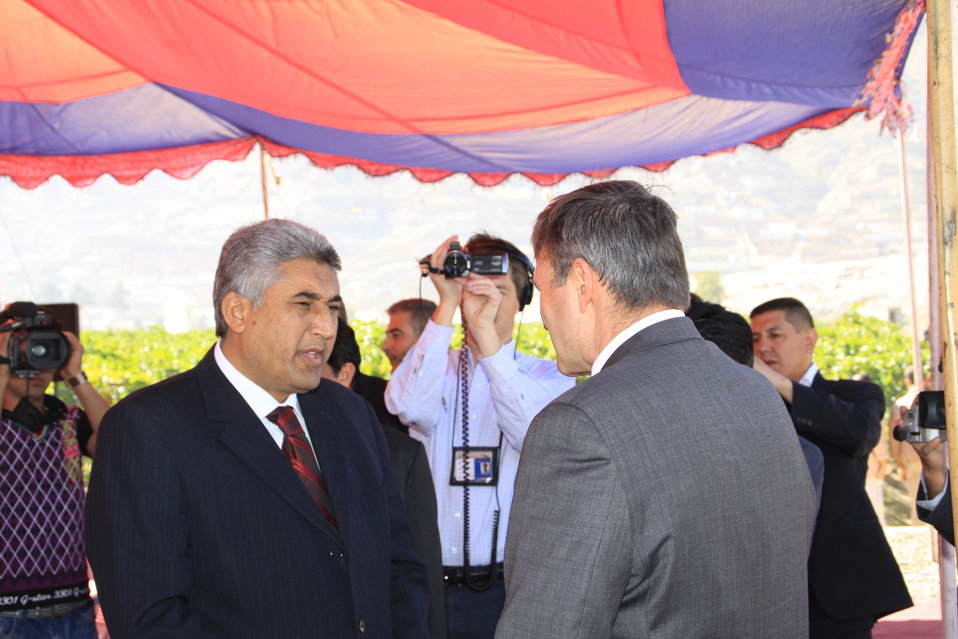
AVIPA Plus Wheat Seed Distribution 101005

US Ambassador Karl Eikenberry and USAID Acting Mission Director Kevin Brownawell joined the Minister of Agriculture, Irrigation and Livestock, H.E. Minister Mohammed Rahimi in signing a Memorandum of Understanding and distributing vouchers to area farmers for wheat and fertilizer.

US Ambassador Karl Eikenberry and USAID Acting Mission Director Kevin Brownawell joined the Minister of Agriculture, Irrigation and Livestock, H.E. Minister Mohammed Rahimi in signing a Memorandum of Understanding and distributing vouchers to area farmers for wheat and fertilizer.